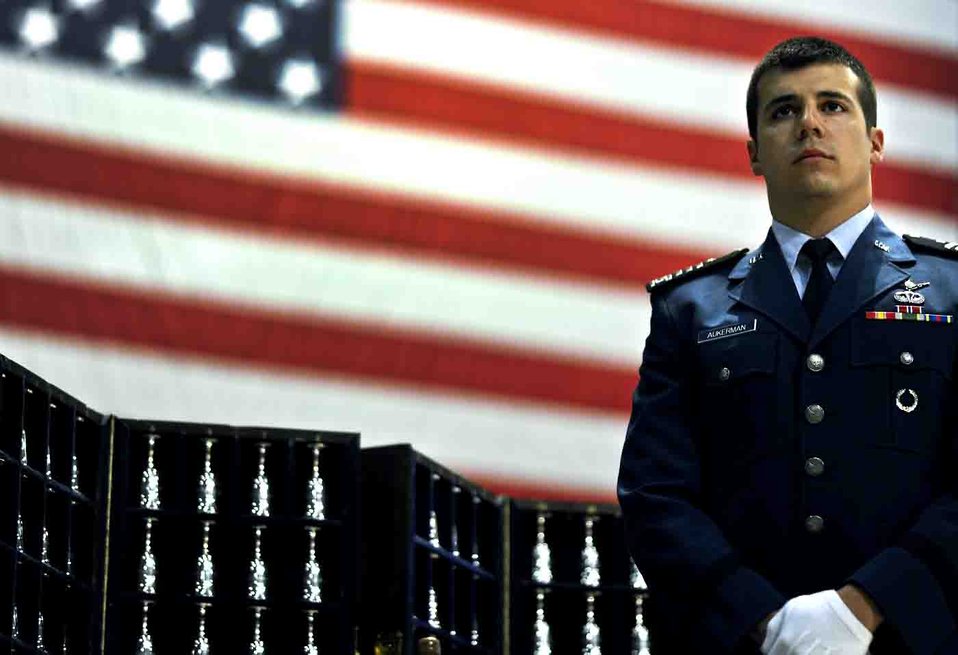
Doolittle Raid 70th anniversary

Cadet Chad Aukerman, Squadron Commander of Cadet Sq. 11 at Air Force Academy, performs the honor of goblet detail during the Doolittle Tokyo Raiders 70th Reunion, April 19 at a banquet for the historic reunion at the National Museum of the U.S. Air Force. Two cadets are selected by the senior staff of the History Department of the Academy to perform the detail during Raider reunions.